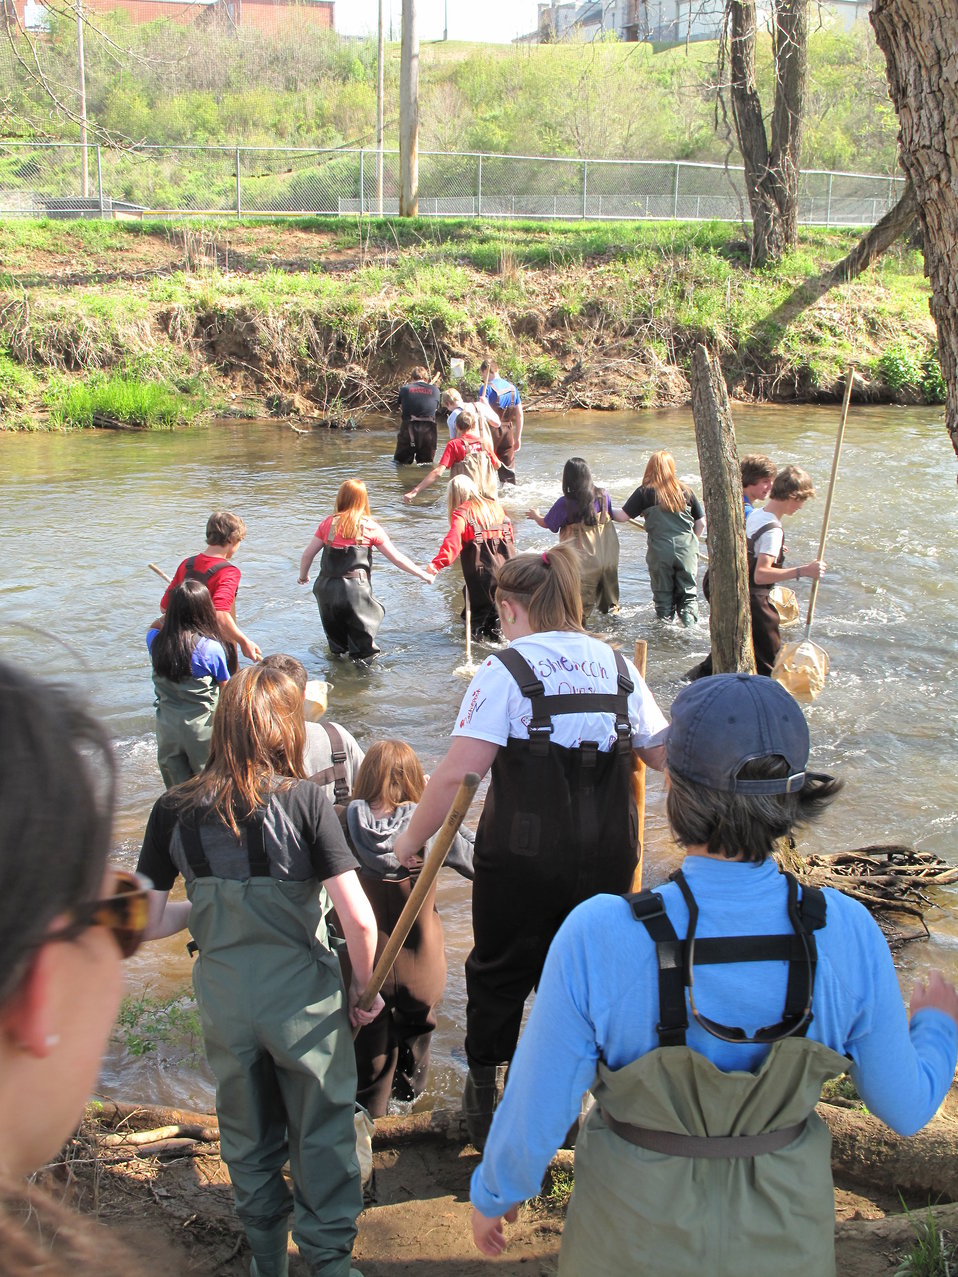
Macon County students entering the creek

Over the course of four days in late April 2014, every eighth grade student at North Carolina’s Macon Middle School, Highlands School, Nantahala School, and Trimont Christian Academy visited Cartoogechaye Park, in Macon County, to learn about rivers.

The students rotated through four stations:
1) water chemistry where they had the opportunity to help test water from Cartoogechaye Creek to gain an idea of the stream’s water quality;
2) aquatic insects, where students collected and identified animals like mayflies and caddisflies, learning how life in the river reflects the health of the river
3) fish, where they were able to collect and identify fish in the stream, and then
4) stream flow, where they measured and calculated the downstream movement of water, including the velocity of the water and the total volume of water being moved per second.

The event was organized by the University of Georgia's Coweeta Long-Term Ecological Research (LTER) Program, which is based at the USFS Coweeta Hydrologic Laboratory. (coweeta.uga.edu/), with sizable support from the Land Trust for the Little Tennessee. Other supporters include the U.S. Fish and Wildlife Service, N.C. Natural Heritage Program, and N.C. Division of Water Resources.